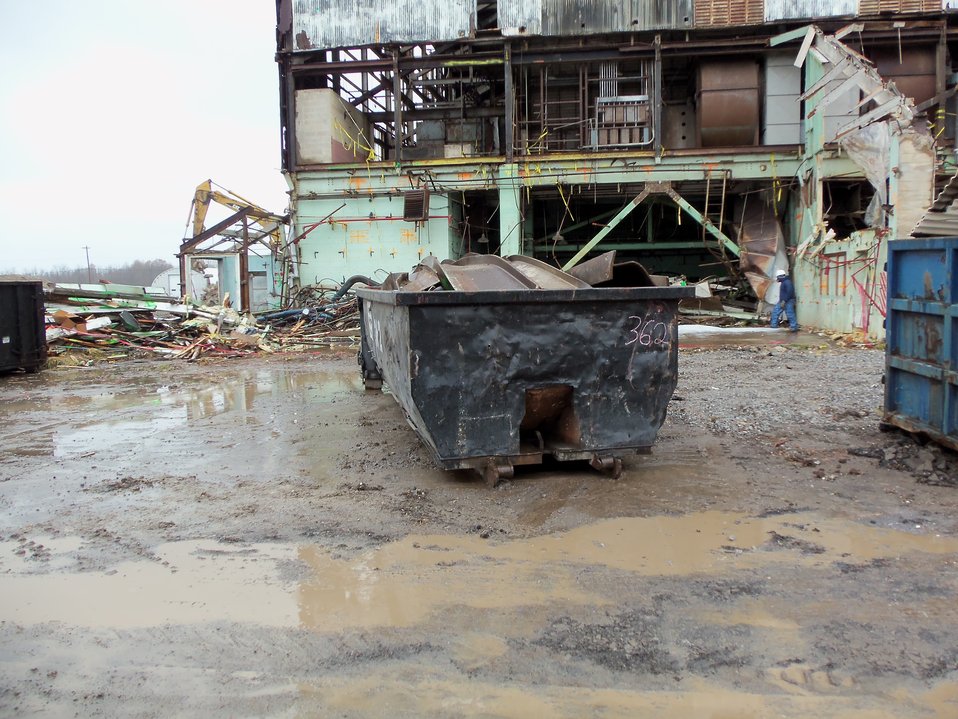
SCRAP METAL AND DEBRIS

Activities from the Niagara Falls Storage Site, which is associated with the former Lake Ontario Ordnance Works. Formerly Utilized Sites Remedial Action Program (FUSRAP), a program initiated in 1974 to identify, investigate and clean up or control sites that were part of the Nation's early atomic energy and weapons program. Activities at the sites that are eligible for FUSRAP were conducted by Manhattan Engineer District (MED) or the Atomic Energy Commission (AEC), both predecessors of the Department of Energy (DOE). The U.S. Army Corps of Engineers was assigned management of FUSRAP by Congress in 1997.